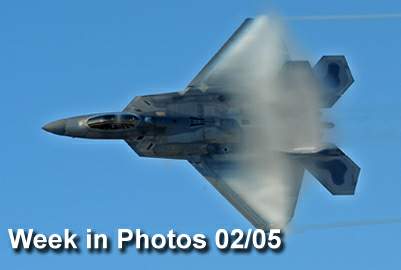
Air Force Week in Photos for Feb. 5, 2010, highlights photos from around the Air Force. In this photo by Senior Airman Zachary Wolf, an F-22 Raptor piloted by Maj. David Skalicky flies over Langley Air Force Base, Va., Feb. 3, 2010.